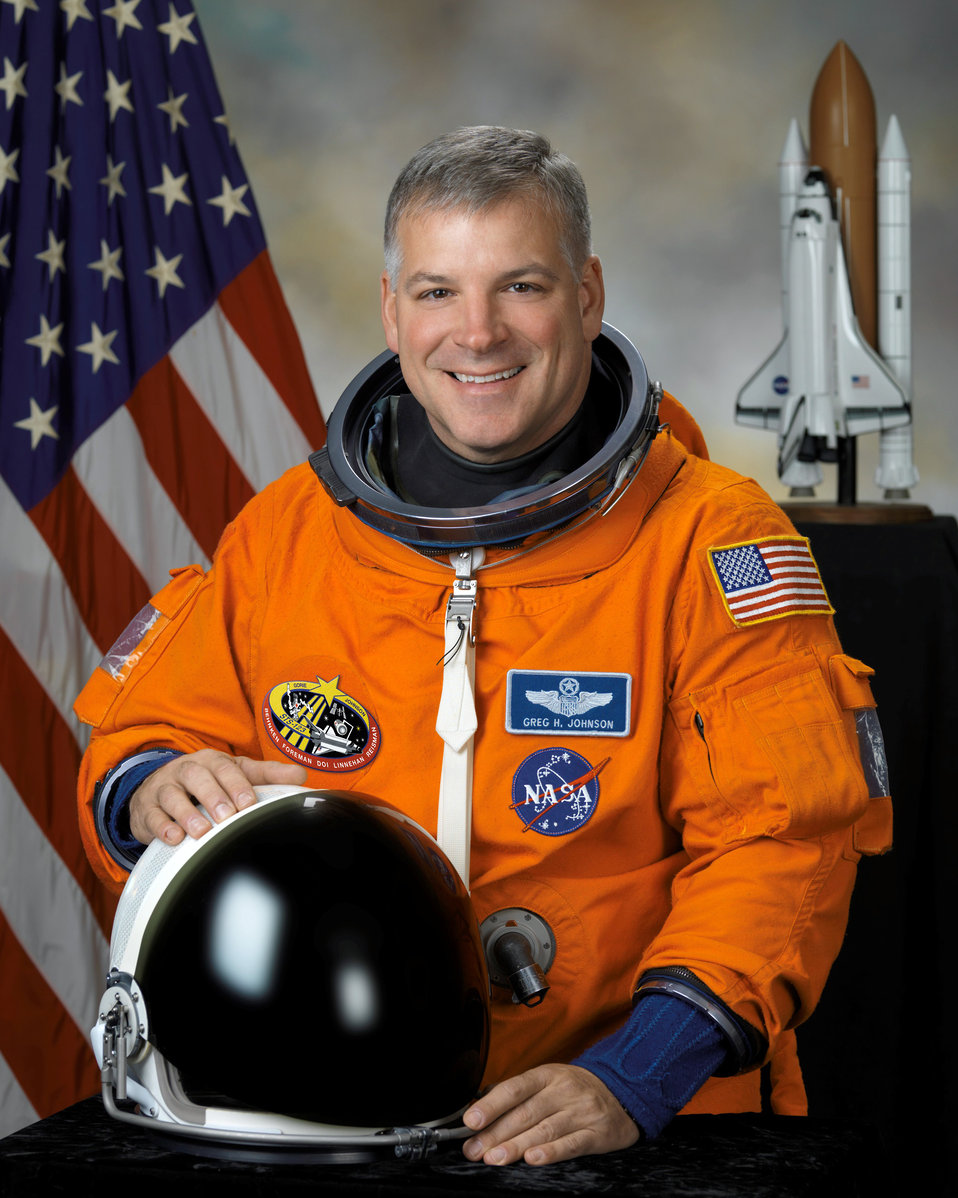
'84 grad to pilot shuttle

Retired Col. Greg Johnson has been selected as the pilot for Space Shuttle Discovery's upcoming mission, STS-134, which will deliver the alpha magnetic spectrometer to the International Space Station. Colonel Johnson is a 1984 graduate of the U.S. Air Force Academy in Colorado Springs, Colo.